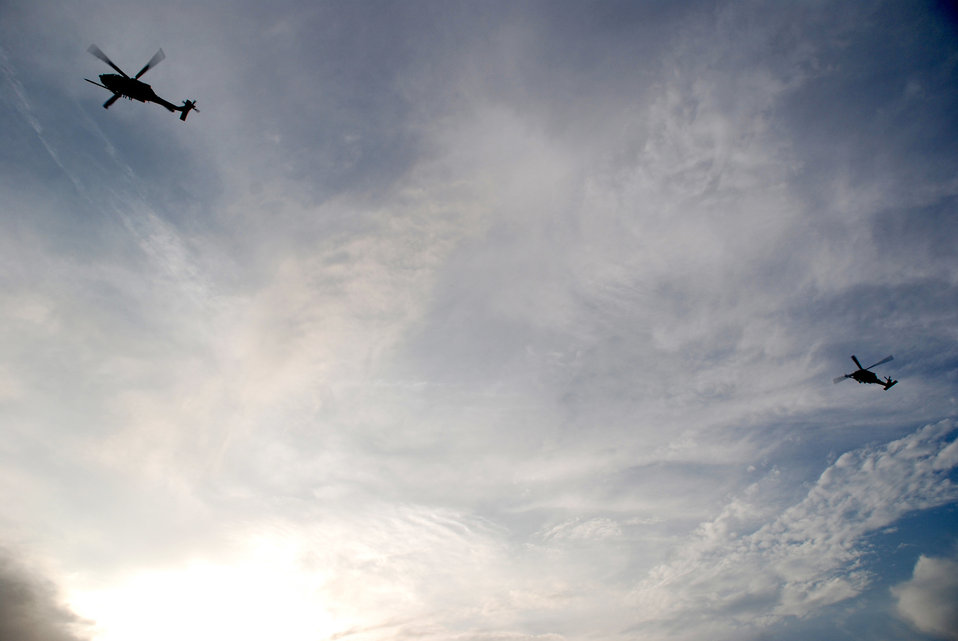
Reservists support rocket launch

An Air Force Reserve HH-60G Pave Hawk helicopter duo with maintenance and life support personnel from the 920th Rescue Wing supported the successful launch of a Delta IV-Heavy Launch Vehicle Nov. 21, 2010, from Cape Canaveral Air Force Station, Fla. The wing participated with mission partners from their host wing, the 45th Space Wing, both from Patrick Air Force Base, Fla.